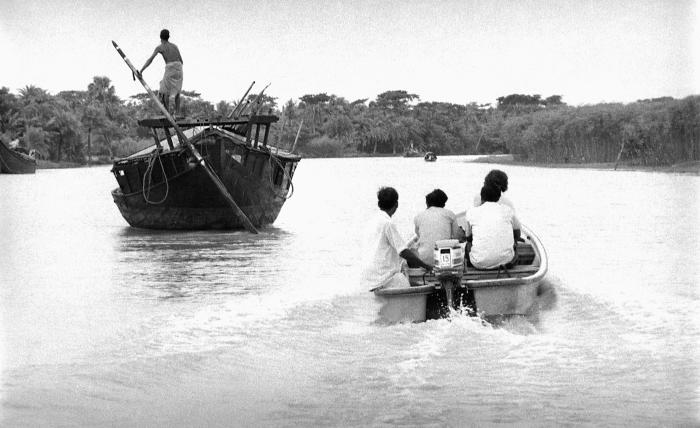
This image depicted the juxtaposition of two modes of river transport. On the left, a large river boat was traveling using a steering rudder as its power source, while speeding past on the right was a gasoline-powered motor boat. This image was part of a series provided by Dr. Stan Foster, and captured by Pierre Claquin, M.D., B.A.C., who at the time was a member of the World Health Organization's Smallpox Eradication Program. It was part of a series photographed by former E.I.S. officer, Stanley O. Foster M.D., M.P.H., and was one of a series entitled 'The Story of One Smallpox Jeep', which depicted the travails faced by the jeep, and its occupants of public health practitioners, as they road through the Bangladesh countryside in an attempt to eradicate smallpox from the country.